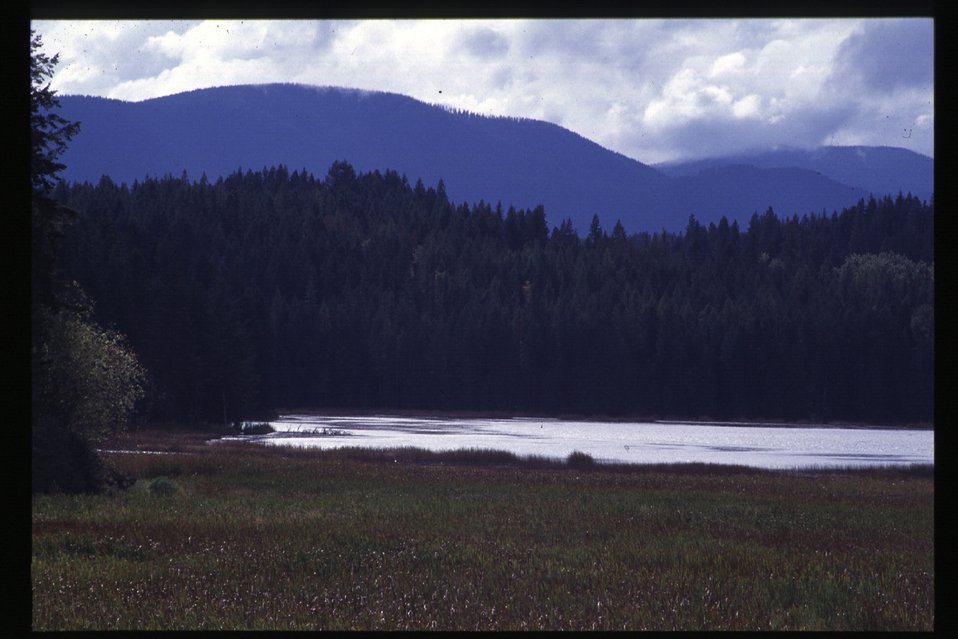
Scenic Gamlin Lake Couer d'Alene Field Office UCSC Upper Columbia Salmon Clearwater District